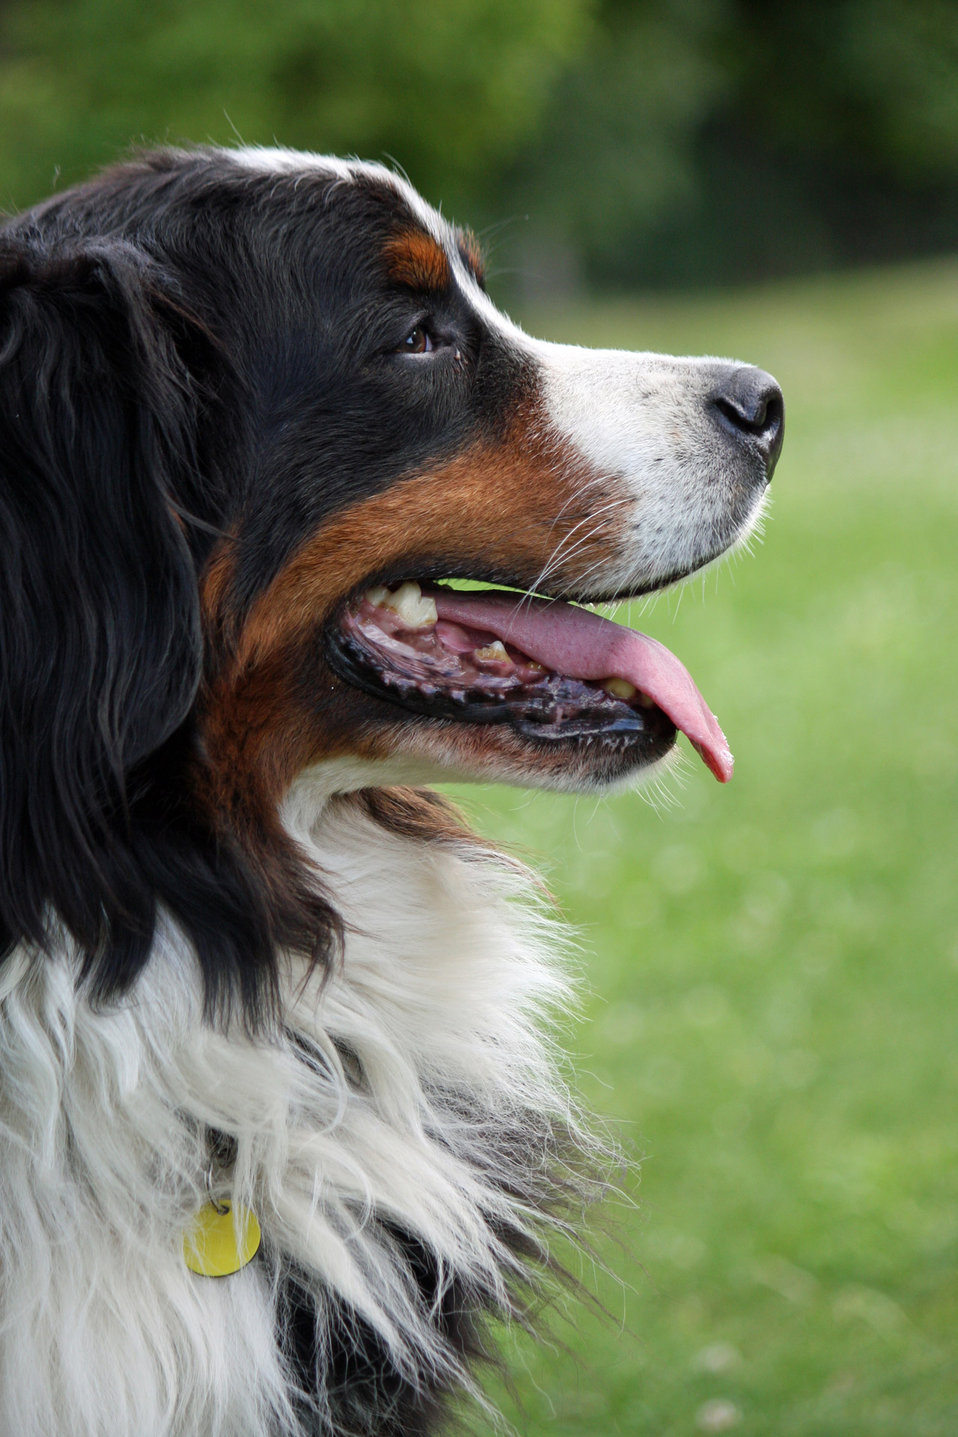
Bernese mountain dog

Profile portrait of a bernese mountain dog in close-up.